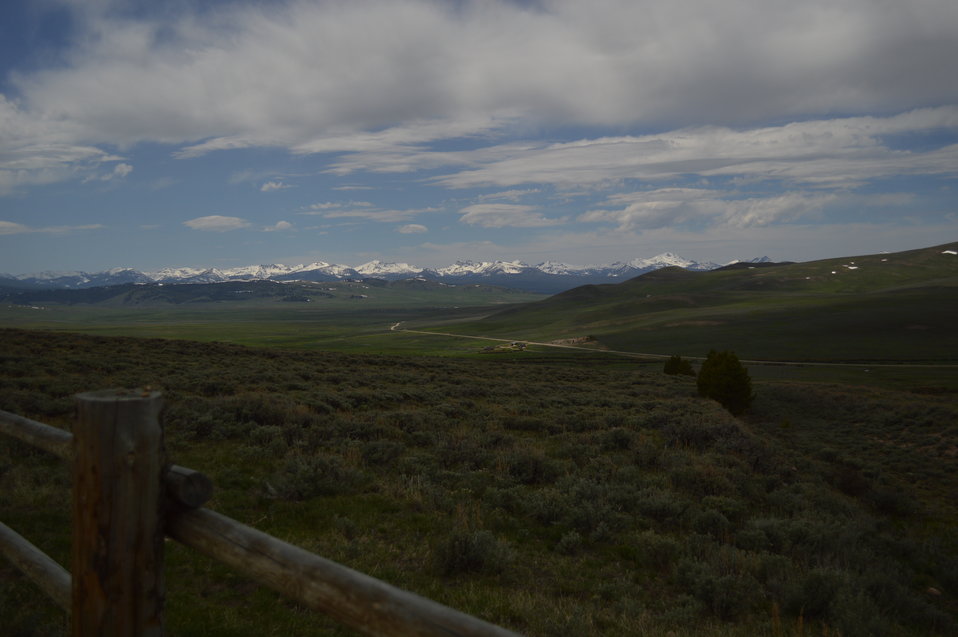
Regional Leadership Visit to Montana 2014